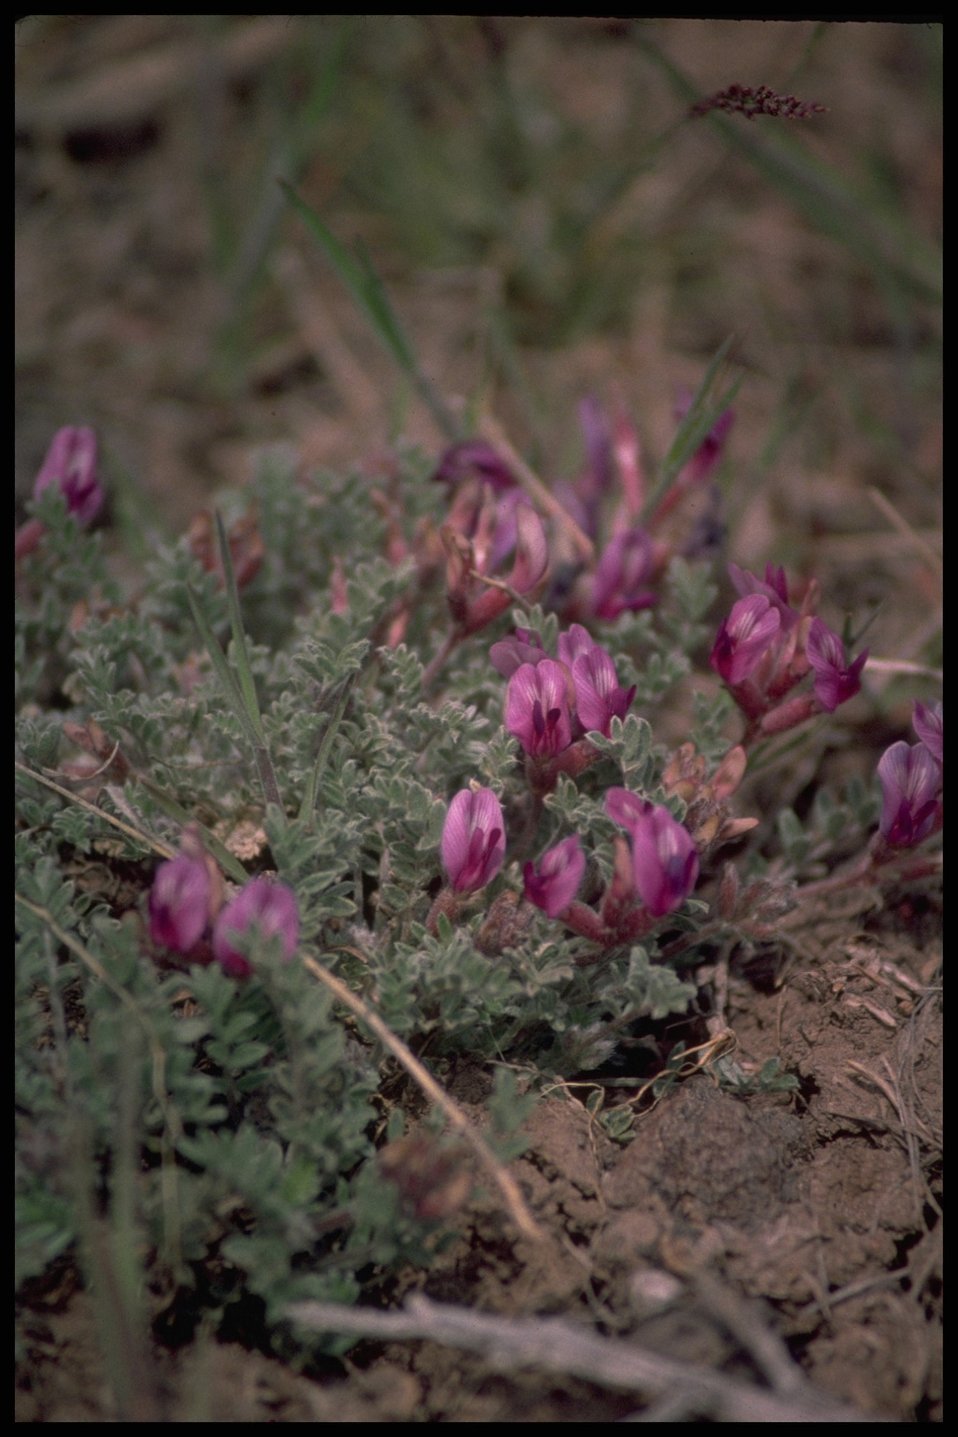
Medium shot of Loco Weed, Lakeview District.